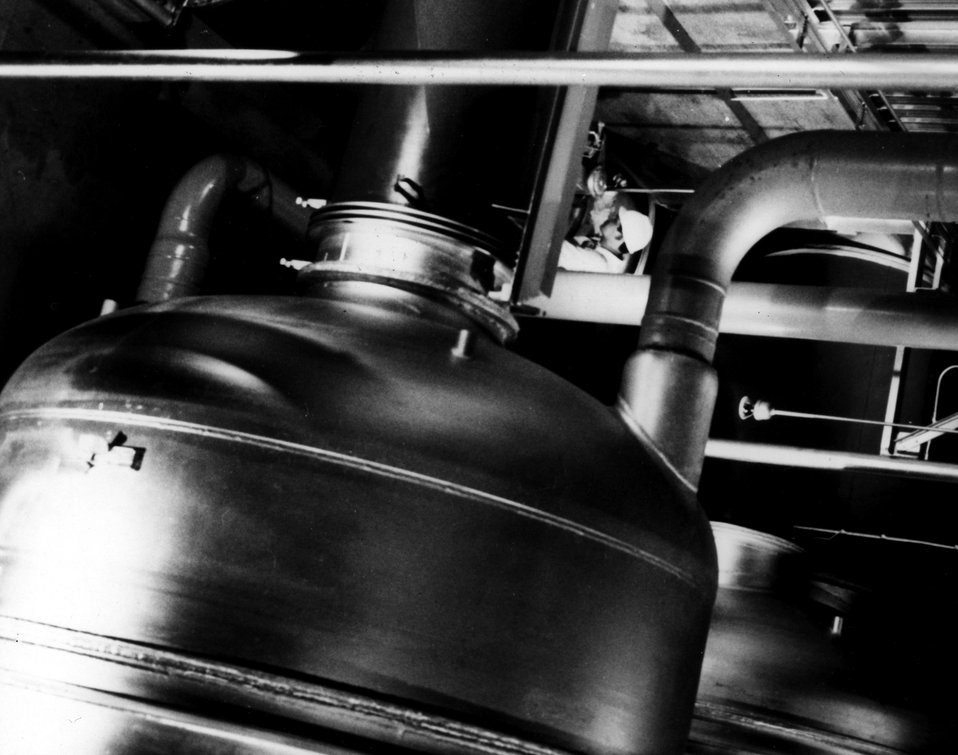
The gaseoud diffusion process, which enriches uranium for use in atomic energy activities, is done at Energy Research and Development Administration-owned, contractor-operated plants in Kentucky, Ohio, and Tennessee. Circa 1971.